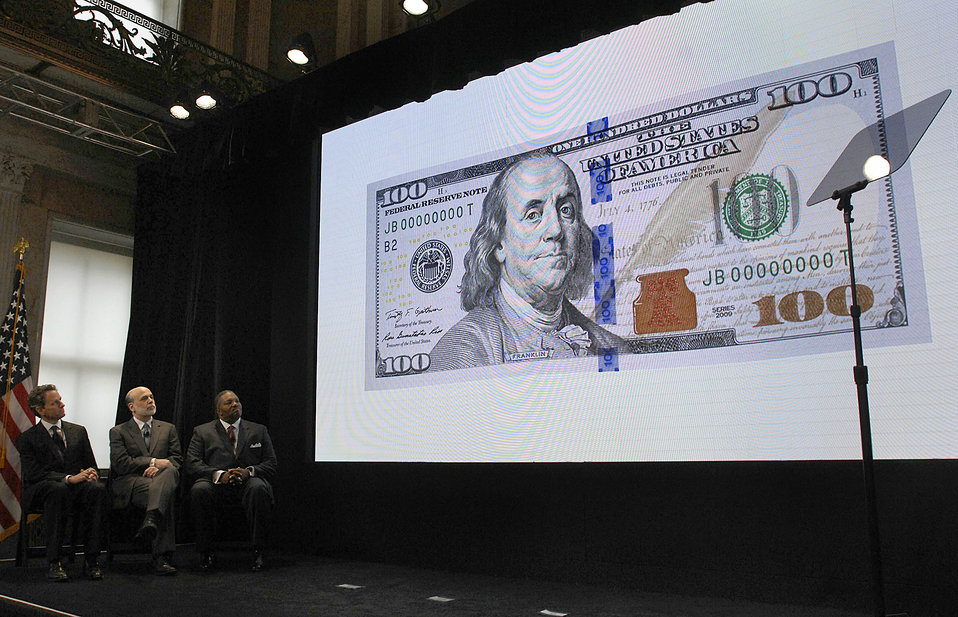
Unveiling of new $100 note, 4/21/2010

Treasury Secretray Geithner, Federal Reserve Chairman Bernanke, and United States Secret Service Deputy Director Prewitt at the unveiling of the new design of the $100 note at Treasury Department on April 21, 2010.